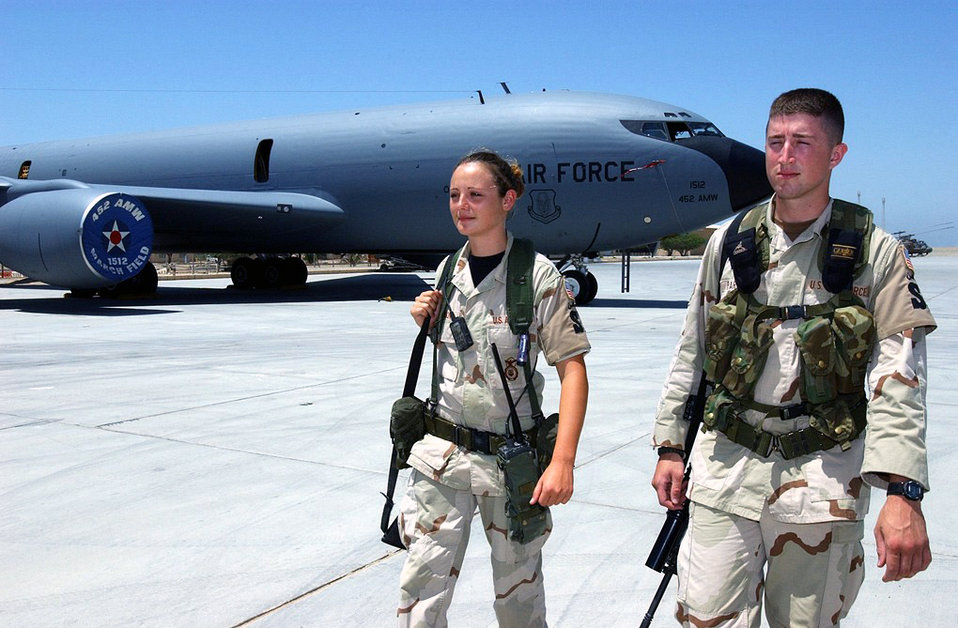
On patrol

OPERATION IRAQI FREEDOM -- Senior Airman Taneka Jackson and Airman 1st Class Jesse Patrick, 321st Expeditionary Security Forces Squadron, patrol the flight line at a deployed location.